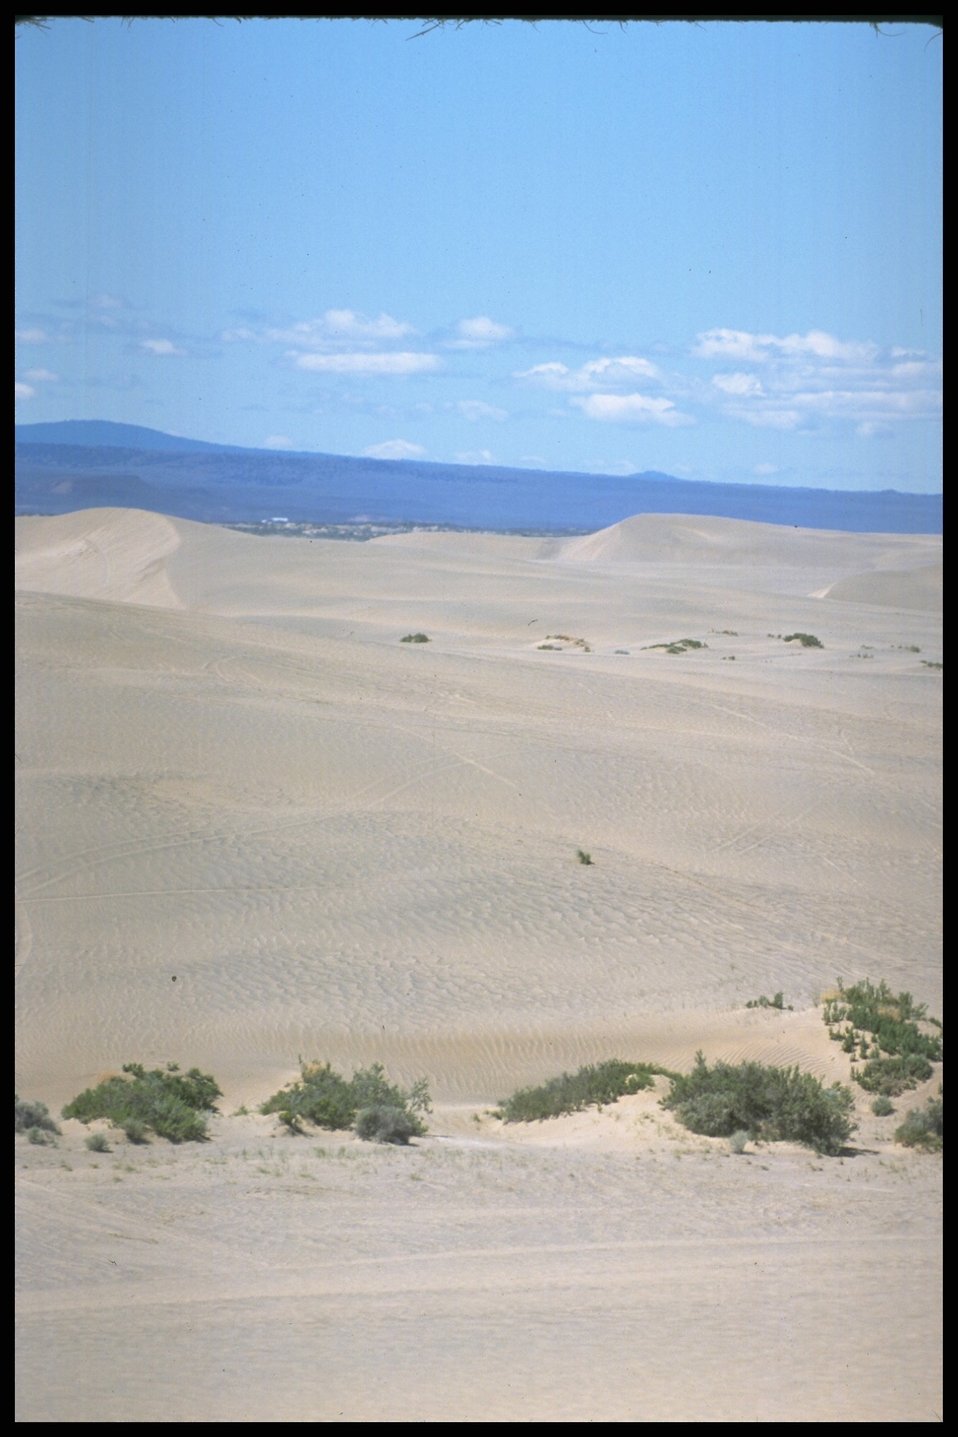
Sand Dunes at Christmas Valley, Lakeview District.